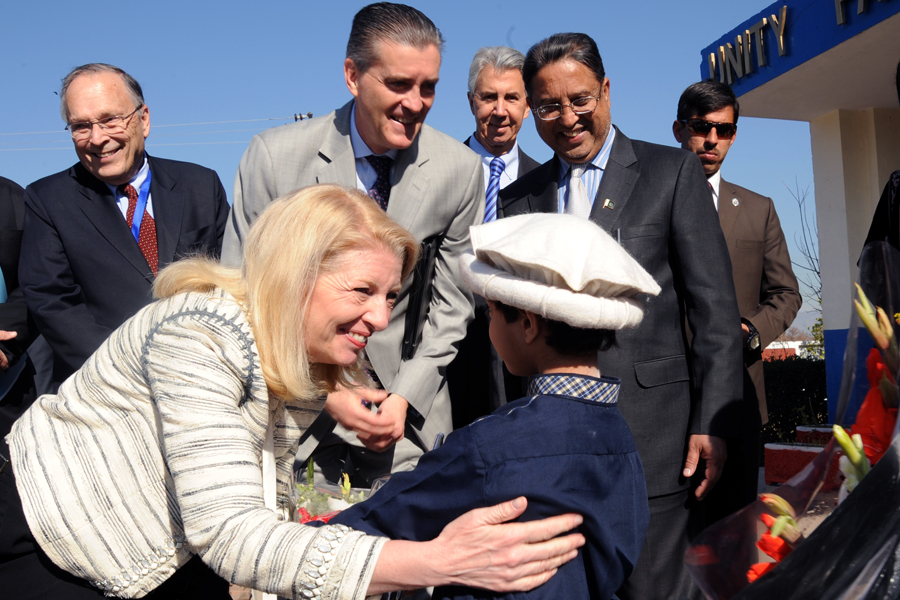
United States and Pakistan Launch the Pakistan Reading Project